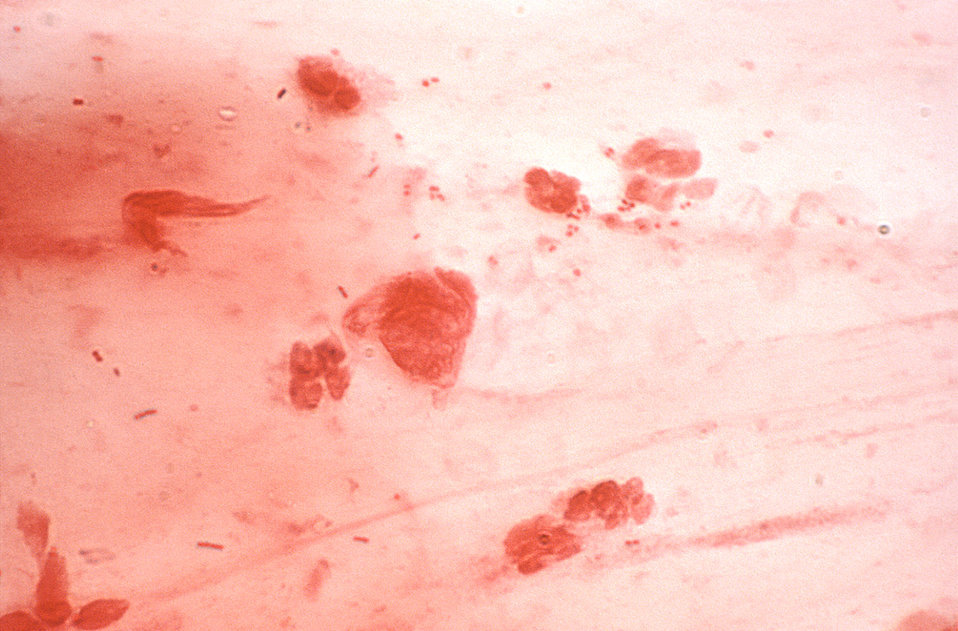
This Gram-stained cervical smear revealed the presence of a few Gram-negative diplococcal N. gonorrhoeae bacteria.